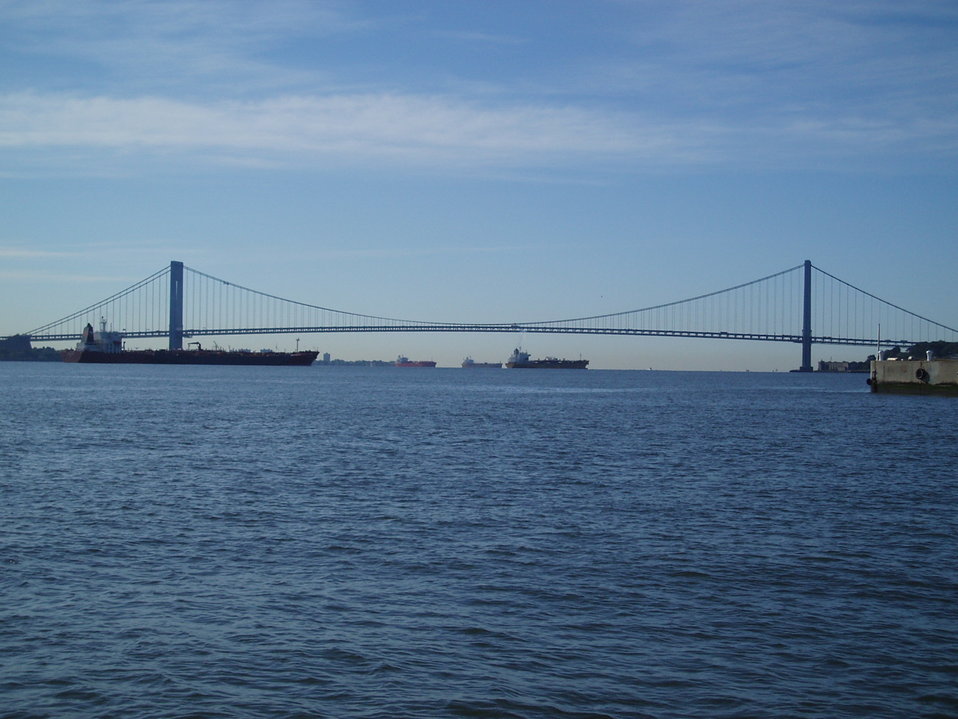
Looking down the Hudson River to the Verrazano-Narrows Bridge.